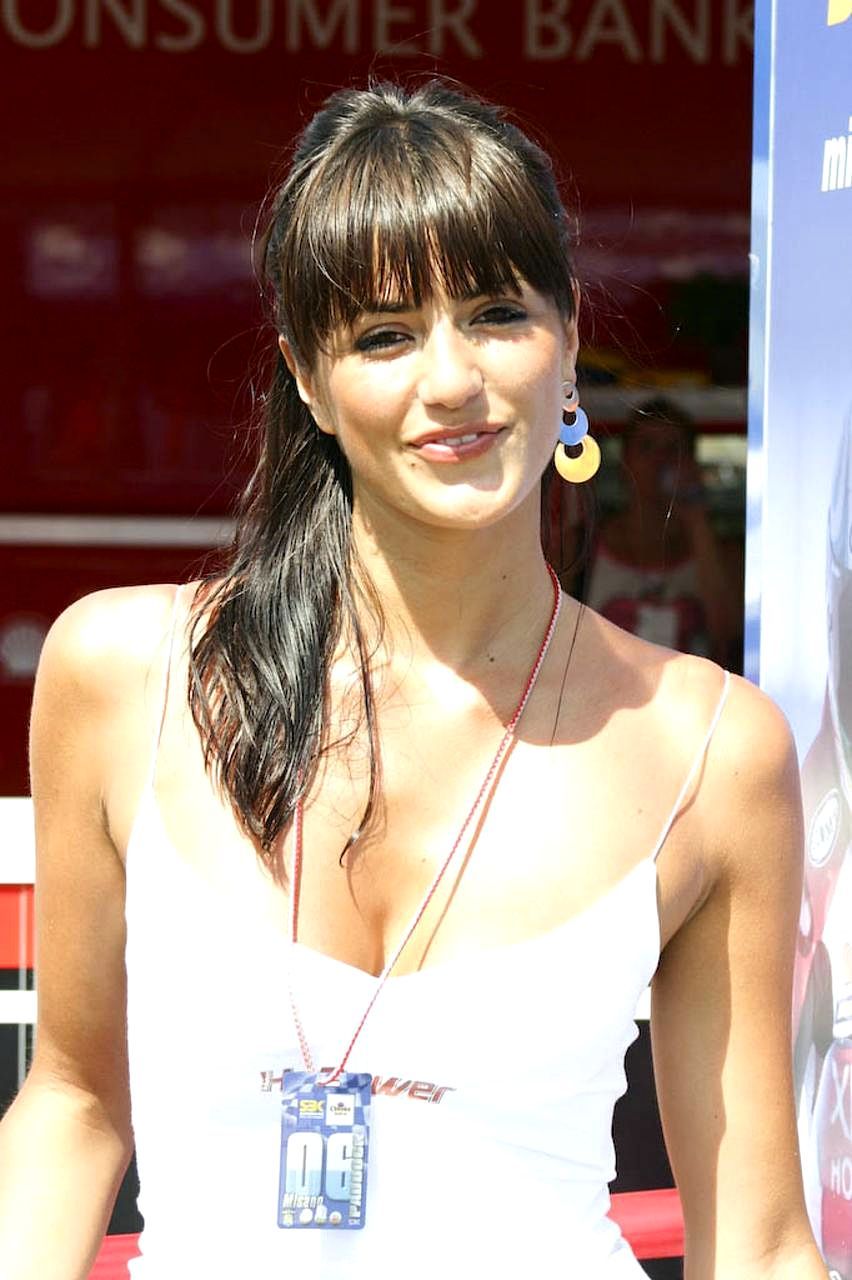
English:
Image title: Beautiful young women Image from Public domain images website, http://www.public-domain-image.com/full-image/people-public-domain-images-pictures/female-women-public-domain-images-pictures/beautiful-young-women.jpg.html